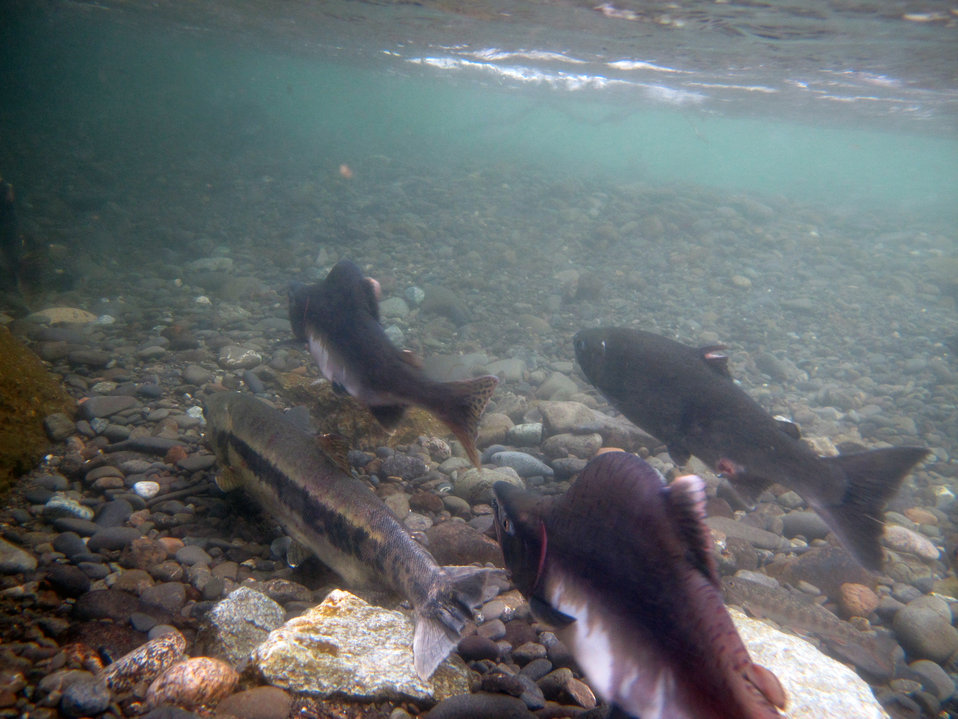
Eclectic Crew, Ship Creek

3 species of salmon and a Dolly Varden char share the Ship Creek migration corridor in Anchorage, Alaska. USFWS/Katrina Mueller